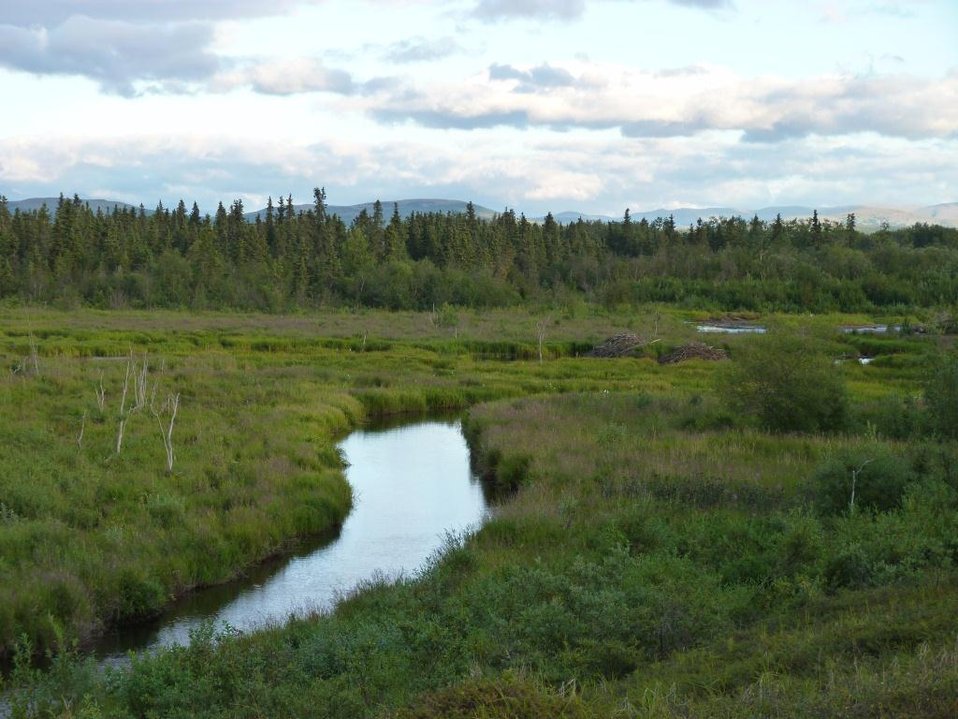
Beaver meadow, Kwethluk River, Yukon Delta National Wildlife Refuge

Photo credit: Kristine Sowl
USFWS, Yukon Delta National Wildlife Refuge